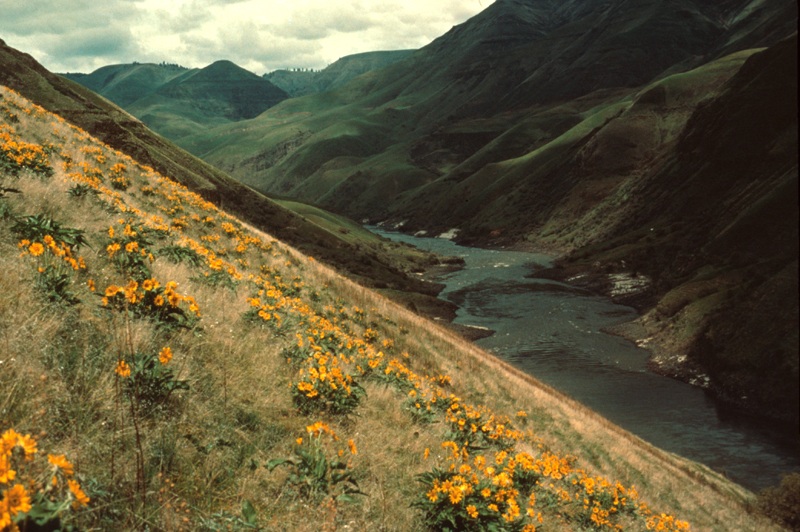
Lower Salmon River Cottonwood Field Office UCSC Upper Columbia Salmon Clearwater District